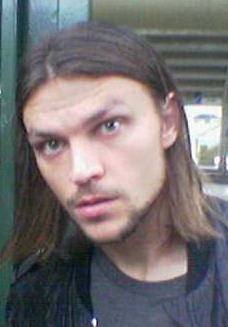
Italiano: E' una foto fatta da me, dal vivo. IacBarlotti 16:06, 25 apr 2007 (CEST)